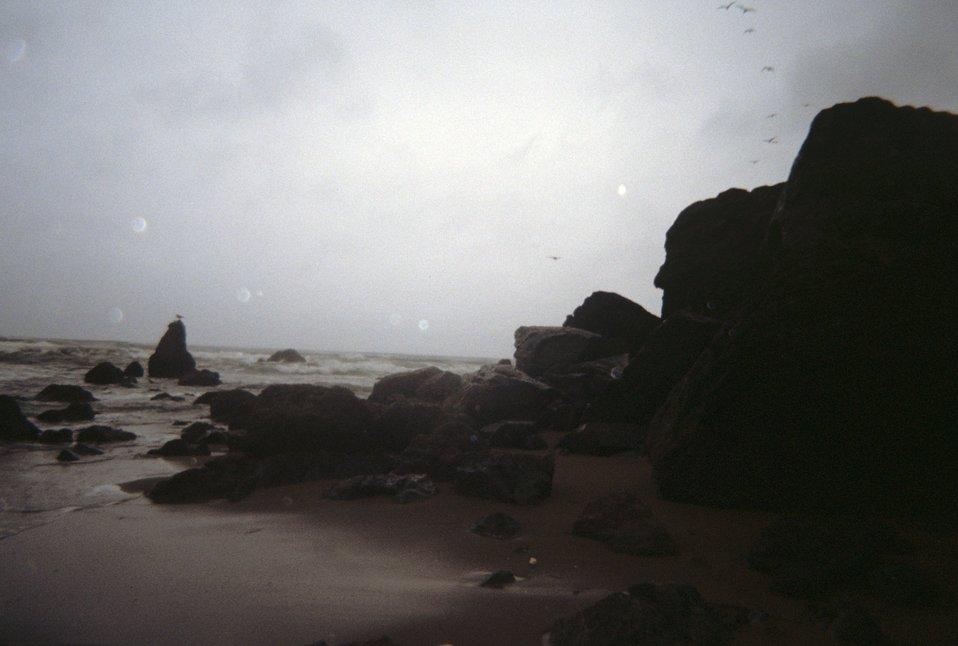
Dillon Beach